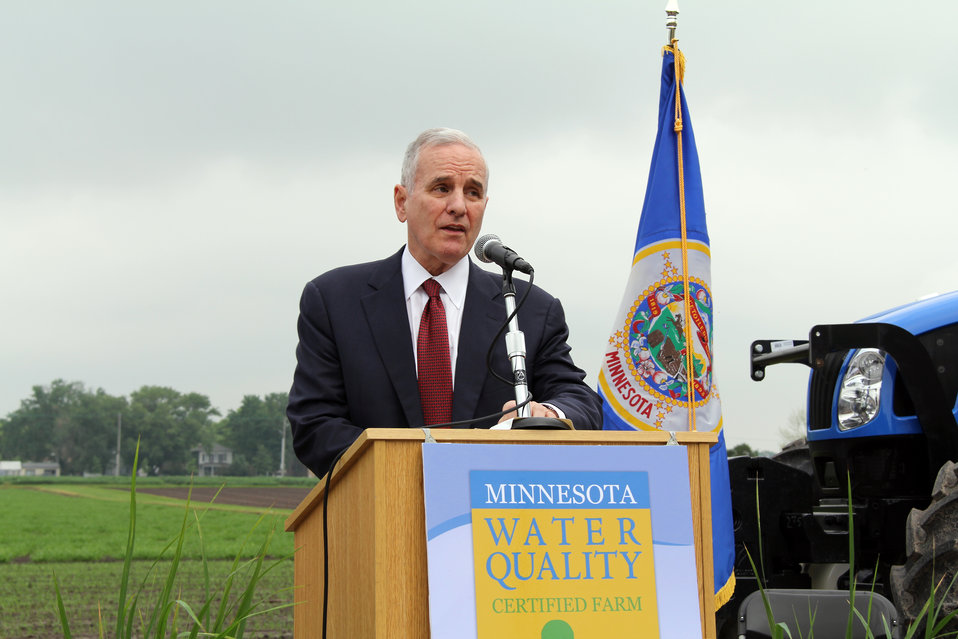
Minnesota Governor Mark Dayton speaks at the launch of the Minnesota Agricultural Water Quality Certification program held at St. Paul University, St. Paul, MN on Monday, Jun. 10, 2013. This program is the first of its kind in the nation and is the product of a state-federal Memorandum of Understanding (MOU) signed by Minnesota Governor Dayton, Agriculture Secretary Vilsack and former Environmental Protection Agency (EPA) Administrator Lisa Jackson in January 2012.